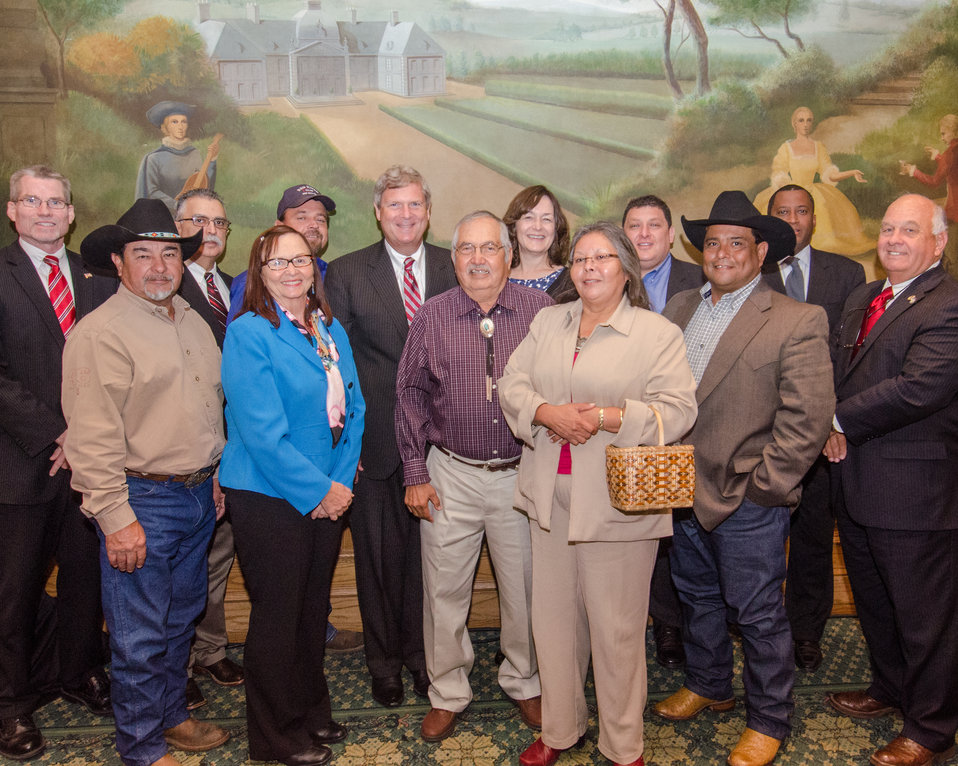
U.S. Department of Agriculture (USDA) Secretary Tom Vilsack (center left, second row) meets with and takes questions from the USDA Council for Native American Farming and Ranching (CNAFR) members, on Monday, Sept. 9, 2013 at the L'Enfant Plaza Hotel, in Washington, D.C. They are pictured here, left to right, U.S. Department of Agriculture (USDA) Farm Service Agency (FSA) Deputy Administrator for Farm Loan Programs Chris Beyerhelm, Farmer/Rancher of the Soboba Band of Luiseno Indians in Banning, CA Edward Soza, USDA FSA Administrator Juan Garcia, Civil Rights Attorney and former Agricultural Commissioner for North Dakota in Bismarck, ND Sarah Vogel, Farmer/Rancher of the Choctaw Nation in Soper, OK Henry “Porter” Holder, Agriculture Secretary Tom Vilsack, Rancher of the Navaho Nation in Shiprock, NM Gilbert Harrison, USDA Director of Tribal Relations Leslie Wheelock, Rancher/Farmer of the Eastern Band of Cherokee Indians in Cherokee, NC Mary Ann Thompson, President, CEO, and co-founder of Ho-Chunk, Inc., of the Winnebago Tribe of Nebraska, Lance Morgan, Natural Resources/Range Manager of the Shoshone-Bannock Tribes in Blackfoot, ID Mark Wadsworth, USDA Assistant Secretary for Civil Rights Dr. Joe Leonard, Jr., and State Legislator and Farmer/Rancher of the Muscogee Nation in Warner, OK Jerry McPeak. Not seen is Lower Brule Sioux Tribe Chairman Michael Jandreau.

CNAFR was created to advise the Secretary on ways to eliminate barriers to participation for Native American Farmers and Ranchers in USDA programs. The Council was established as part of the Keepseagle settlement, and is conducted under the oversight of USDA's Office of Tribal Relations, which is part of the Office of the Secretary of Agriculture. The Director of Tribal Relations Leslie Wheelock serves as Designated Federal Official (DFO) for the Council.